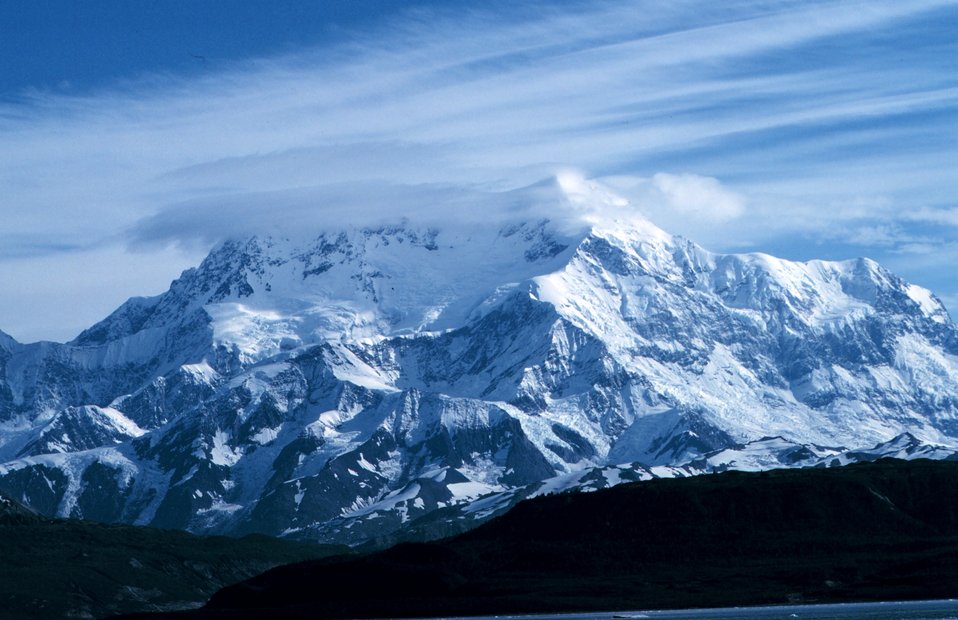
Photo #19 of Mount St. Elias sequence.